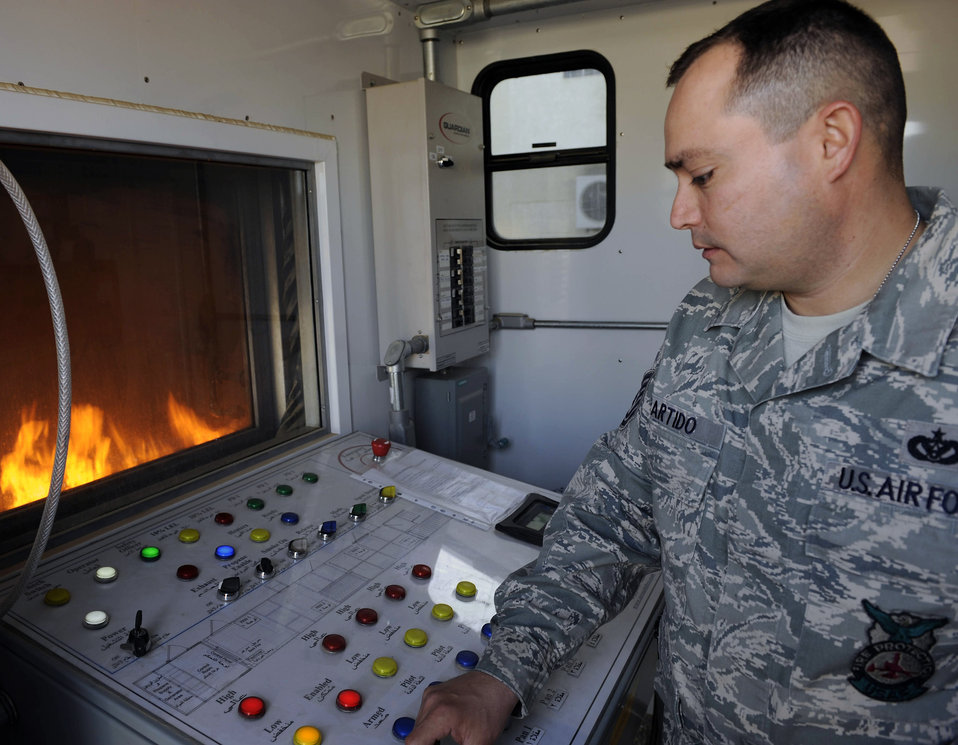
Airmen train firefighter managers, Iraqis graduate

Tech. Sgt. Brian Partido starts the fire training simulator at the school house in Baghdad, Iraq, Feb. 5. Sergeant Partido is an Air Force advisor training the Iraqi air force and the Iraqi Civil Defense on basic firefighter. The Firefighters Managers Course is a 10-day class that covers general fire management, safety precaution, fire inspection, fire investigation and incident management system. Sergeant Partido is a 821st Basic Technical Training Squadron Coalition Air Force Training Team fire rescue advisor.